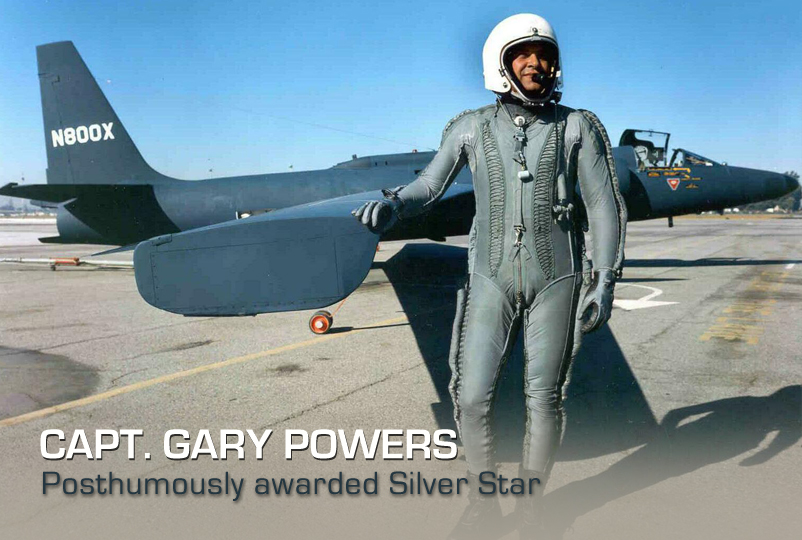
Capt. Gary Powers